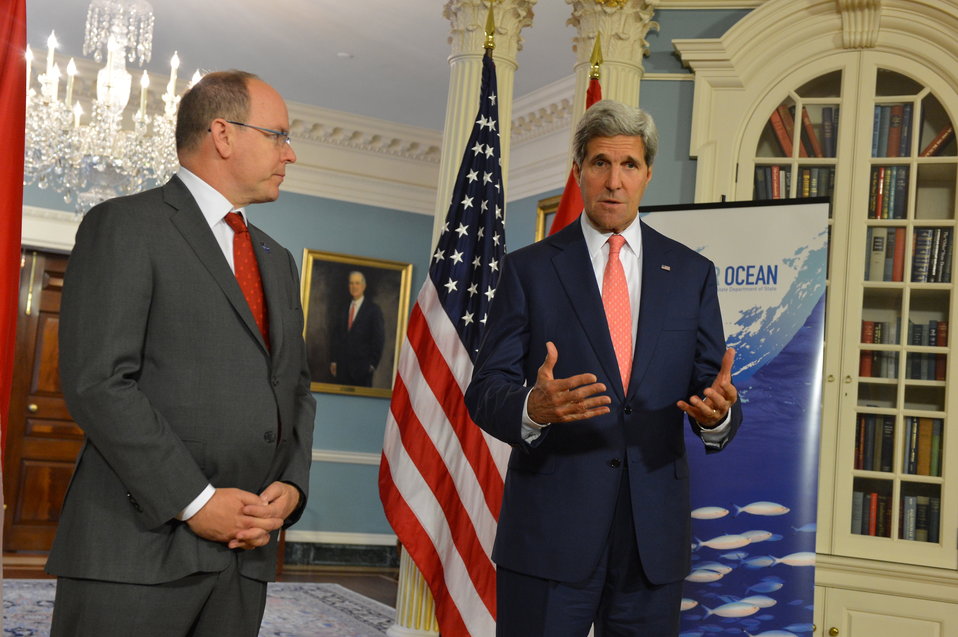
Secretary Kerry Delivers Remarks With Prince Albert II of Monaco Prior to Their Meeting

U.S. Secretary of State John Kerry delivers remarks with Prince Albert II of Monaco prior to their meeting at the U.S. Department of State in Washington, D.C. on June 16, 2014.